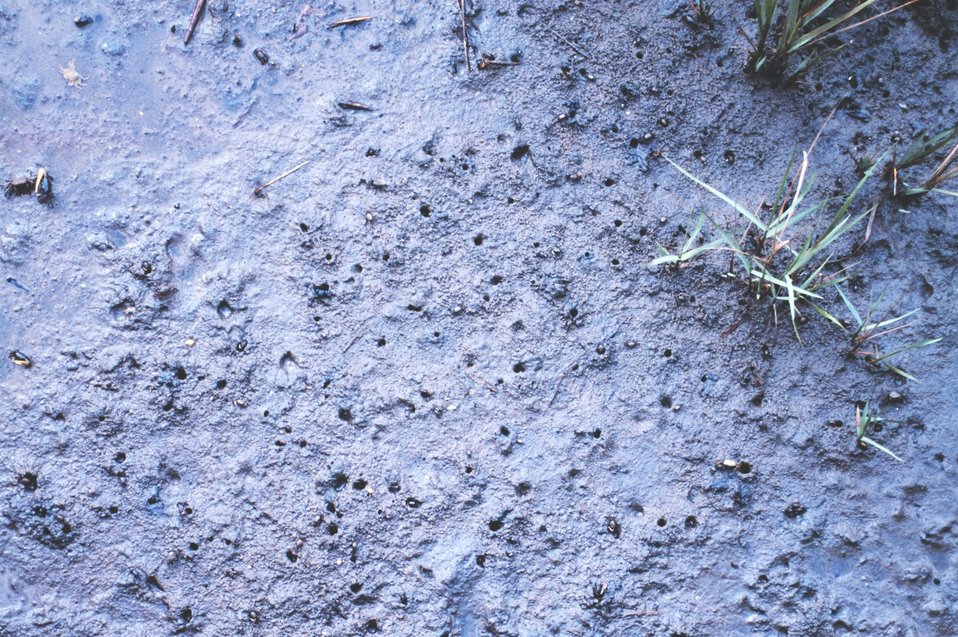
Tidal mudflats